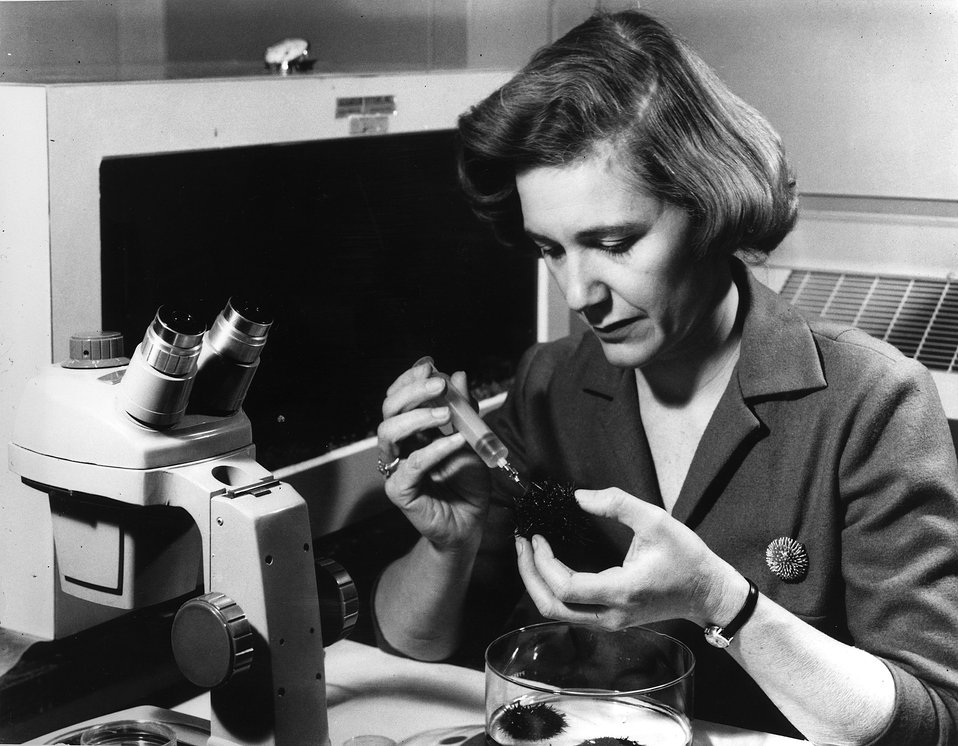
Gametes (matured sex cells or germ cells) are being harvested from sea urchins to study the effects of radiation on cell division.
c.1971